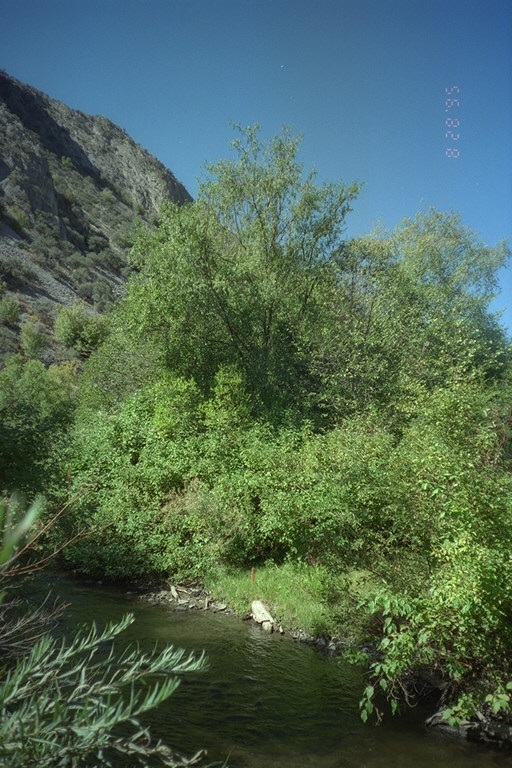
Riparian area Public Lands Salmon Field Office UCSC Upper Columbia Salmon Clearwater District